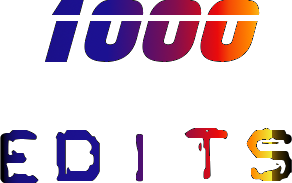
Italiano: l'ho fatta io, la rilascio in PD